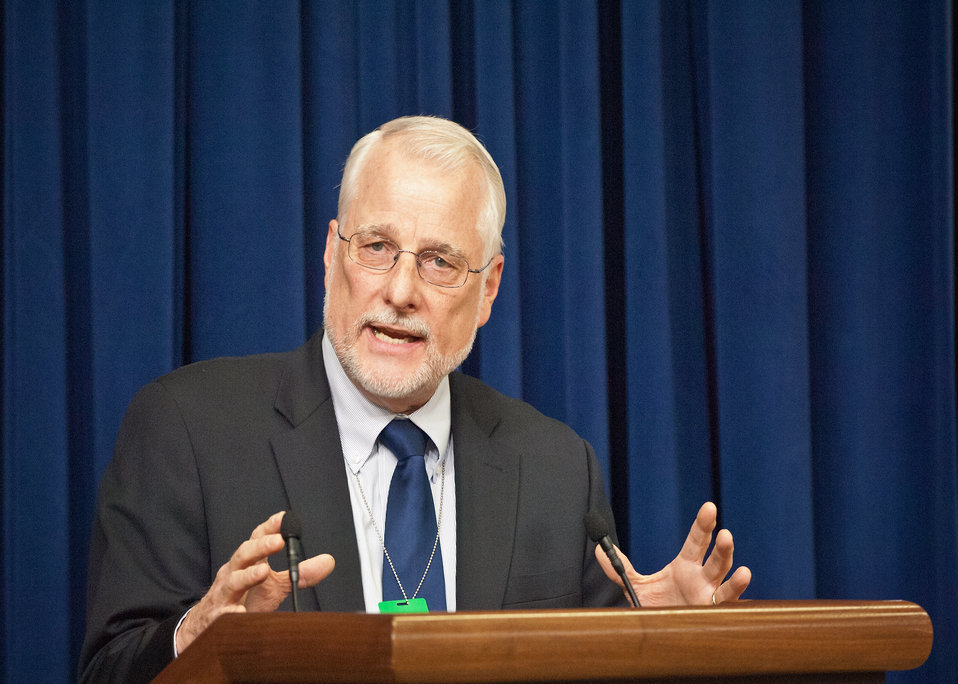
Dave White, Chief, Natural Resources Conservation Service discussed the success of conservation efforts of the United States Department of Agriculture Natural Resources Conservation Service at the 11th Annual Meeting of State Agriculture and Rural Leaders at the Eisenhower Executive Office Building in Washington, D.C., on Friday, January 6, 2012.